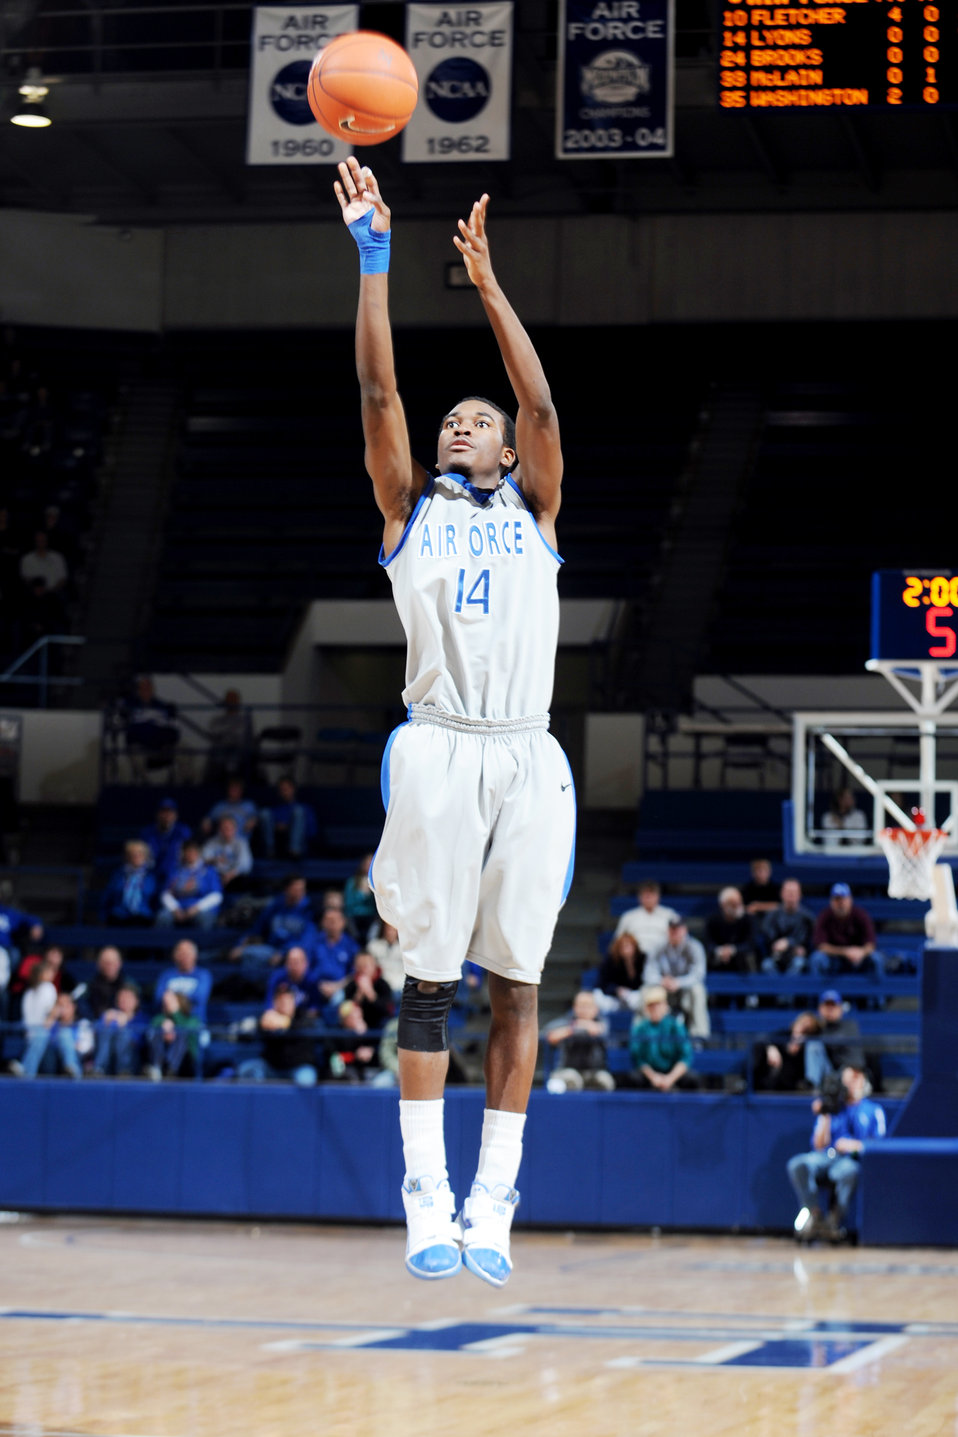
Falcons vs Northern Arizona

Falcon freshman guard Michael Lyons takes a jumpshot during the U.S. Air Force Academy game against Northern Arizona at the Academy's Clune Arena Dec. 19, 2009. Air Force lost the game 60-52.